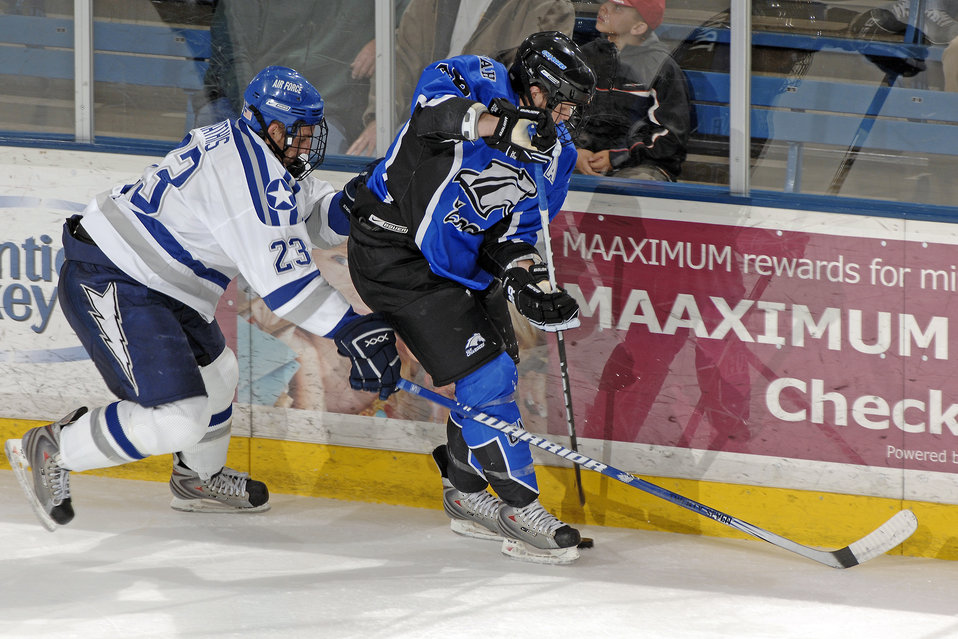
Falcons get out-Charged!

Falcon sophomore Scott Mathis fights for control of the puck against a University of Alabama-Huntsville opponent Oct. 17, 2009, at the U.S. Air Force Academy Cadet Ice Arena near Colorado Springs, Colo. The UAH Chargers held off the Falcons for a 4-2 win. Air Force opens Atlantic Hockey Association play this weekend as the Falcons host the Rochester Institute of Technology Oct. 23-24 at the arena.